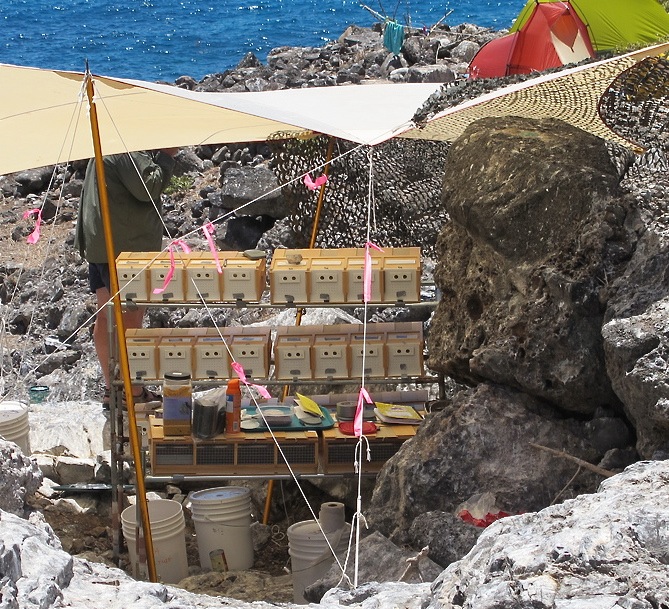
millerbird holding cages

Nihoa Island
Sept. 5, 2011